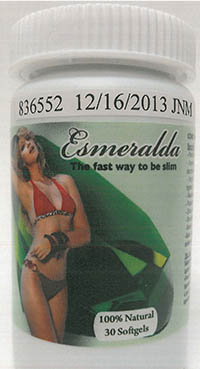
RECALLED – Dietary Supplement

March 25, 2014 – Product Recall – New Life Nutritional Center Issues Voluntary Nationwide Recall of Super Fat Burner, Maxi Gold and Esmeralda Dietary Supplements Due to the Presence of Undeclared Sibutramine and Phenolphthalein.